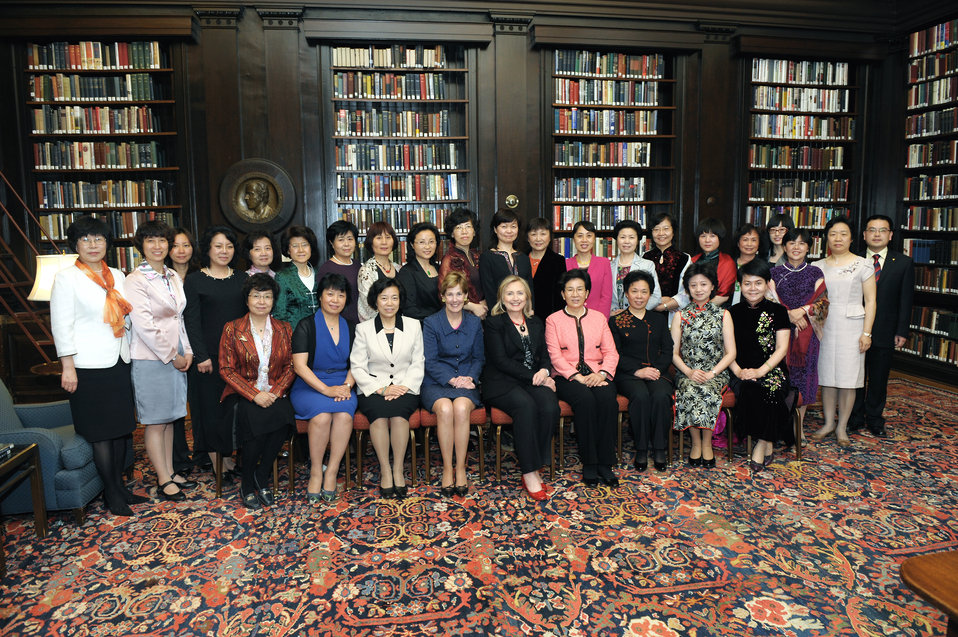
Secretary Clinton and Ambassador Verveer Meet With Participants in the Yale Chinese Women's Leadership Development Program

U.S. Secretary of State Hillary Rodham Clinton and Ambassador-at-Large for Global Women’s Issues Melanne Verveer meet with participants in the Yale Chinese Women’s Leadership Development Program, the first of several public-private partnerships formed under the auspices of the U.S.-China Women’s Leadership Exchange and Dialogue (Women-LEAD), at the Metropolitan Club in Washington, D.C., on May 10, 2011.